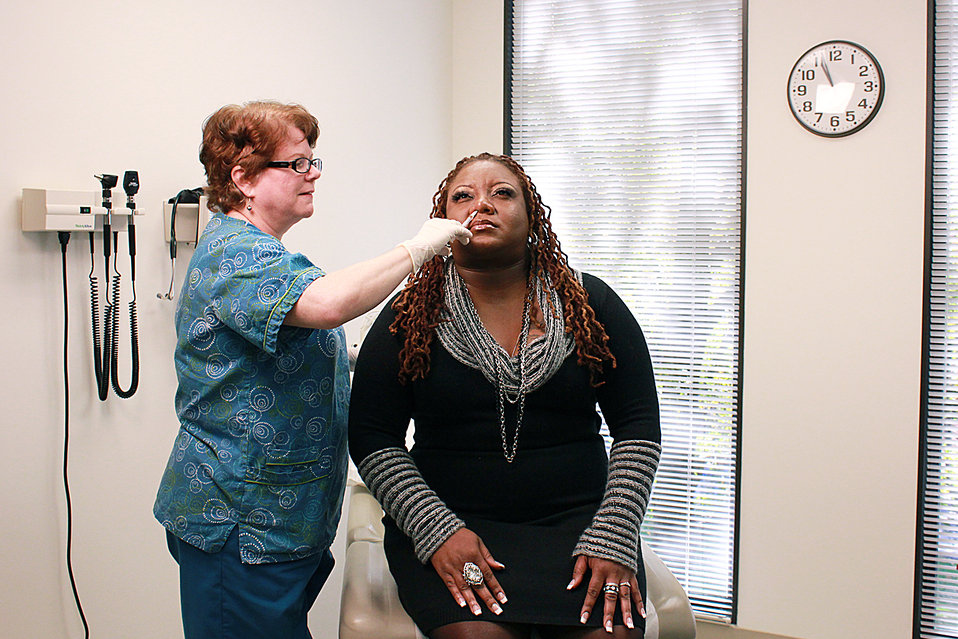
This image depicts a qualified nurse in a clinical setting, who was in the process of administering a dosage of FluMist� live attenuated intranasal vaccine LAIV) into the right nostril, and into this patient's nasal cavity. Note that the nurse's hands were gloved, thereby, avoiding the possibility of cross-contamination.